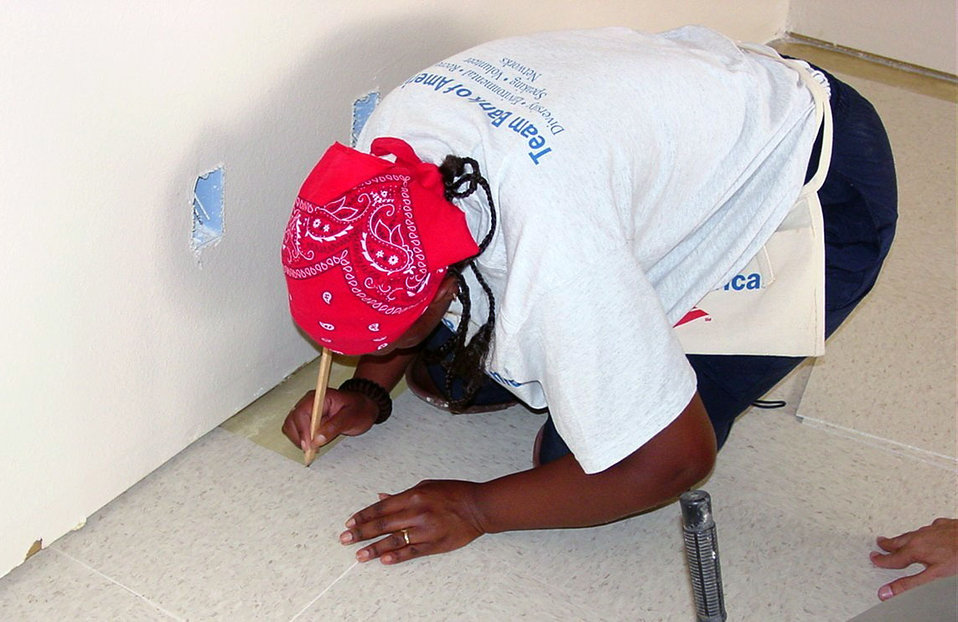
Careful work

LACKLAND AIR FORCE BASE, Texas -- Namibia army Corporal Julia Gebhardt used exacting detail laying tile as she contributed her skills working side-by-side American volunteers and her fellow international military students.